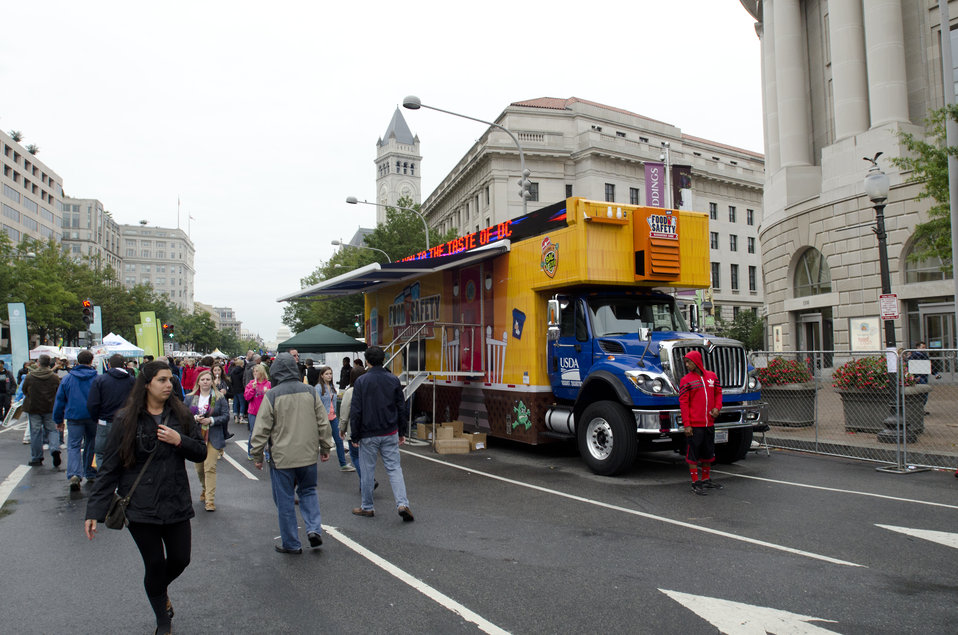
Agriculture’s mobile Discovery Zone is a hands-on vehicle that travels the nation educating children and parents about the four main principals of home food safety – clean, separate, cook and chill, at the Taste of D.C., event that highlights more than 70 eateries, 30 specialty beer providers, the United Service Organization (USO) Metropolitan Washington, and live bands. It is anticipated that more than 500,000 people will attend over the course of the three-day event, which extends from the White House to the Capitol, along Pennsylvania Ave. in Washington D.C. on Sunday, October 7, 2012. Agriculture Food Safety and Inspection Service specialists present talks and cooking demonstrations.